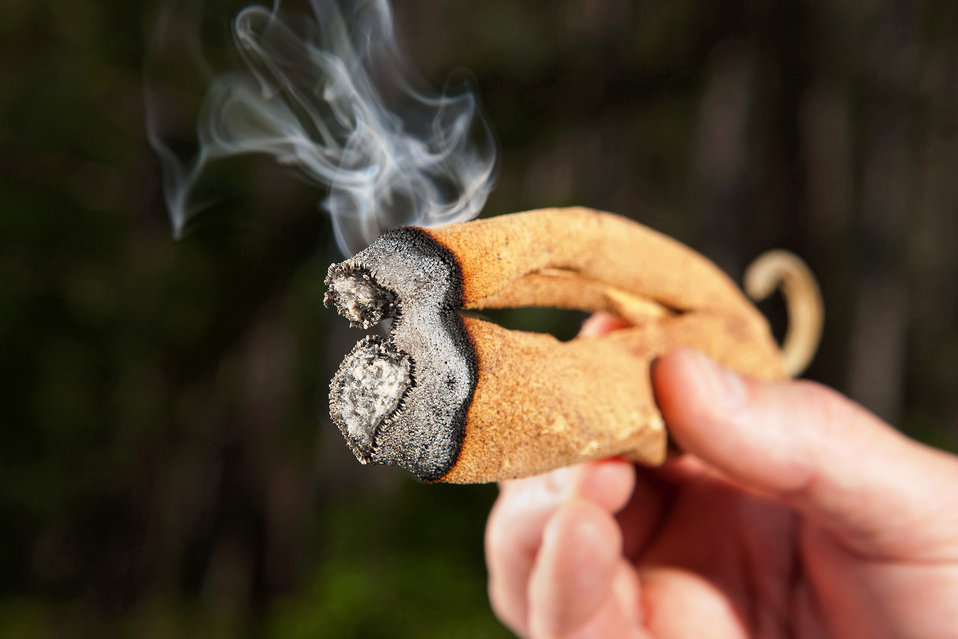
The dried inflorescence of the breadfruit tree is burns on Sept. 19, 2003. The burning of the dried inflorescence of the breadfruit tree is burned to repel biting insects in some parts of the world. U.S. Department of Agriculture (USDA) Agricultural Research Service (ARS) scientists are studying the compounds inside this interesting flower to find out what it contains and whether it might lead them to new repellents.